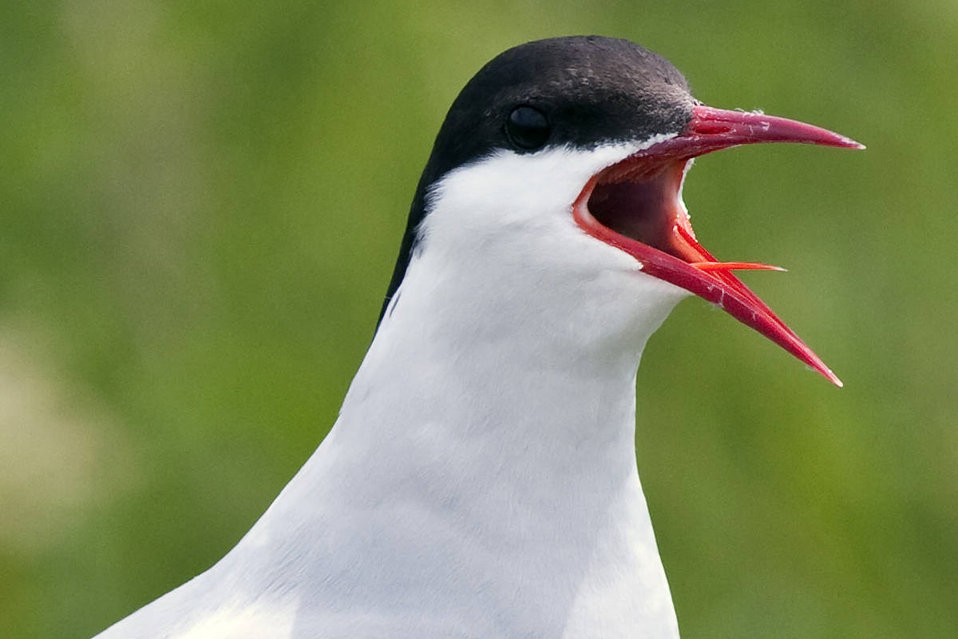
Arctic tern

Petit Manan Island, Maine Coastal Islands National Wildlife Refuge/USFWS